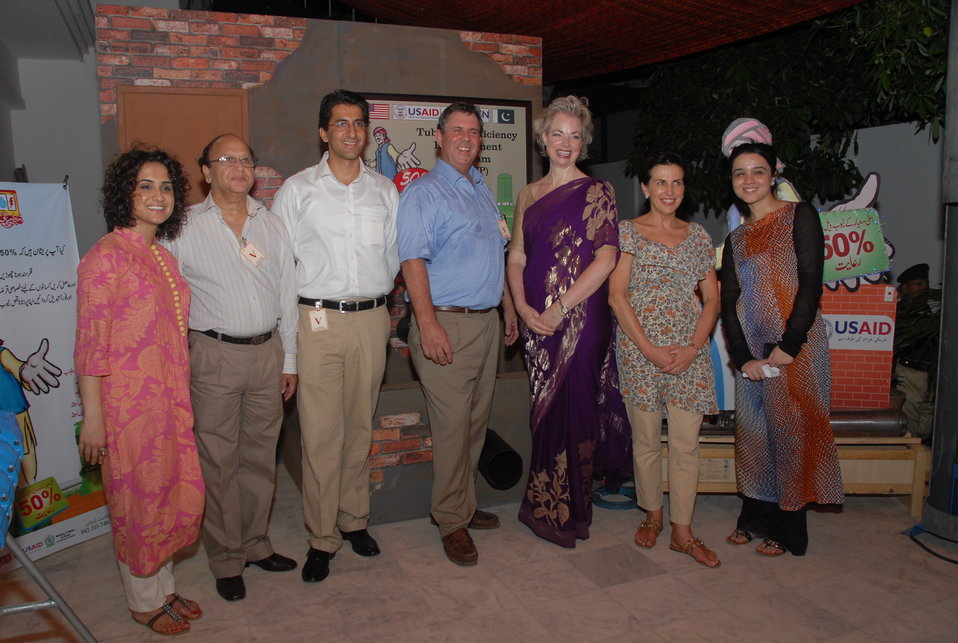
Celebration of America’s Independence Day in Lahore

Lahore, June 30, 2011 – Group photo of the guests with Carmela Conroy, Consul General Lahore. During celebration of America’s Independence Day.